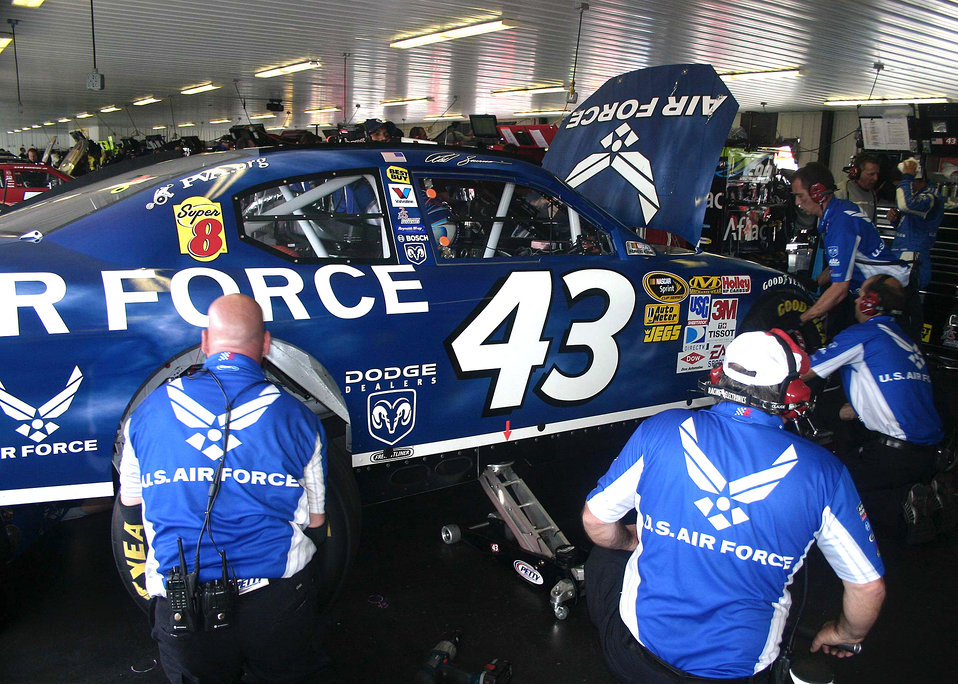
Pennsylvania 500 NASCAR weekend

Crew members prepare the No. 43 car for a practice run at the Pocono Raceway. The Pennsylvania 500 was the fifth and final race of the season featuring the Air Force paint scheme. The Air Force is also an associate sponsor for the Richard Petty Motorsports team in 33 other NASCAR races.